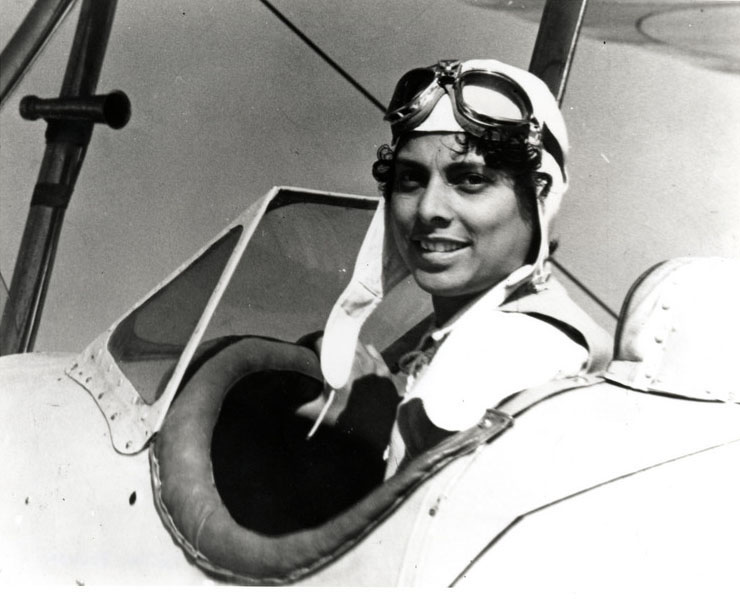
Willa Brown: Helped African-Americans become part of military

Willa Brown helped create aviation school to help incorporate African-Americans into aviation.